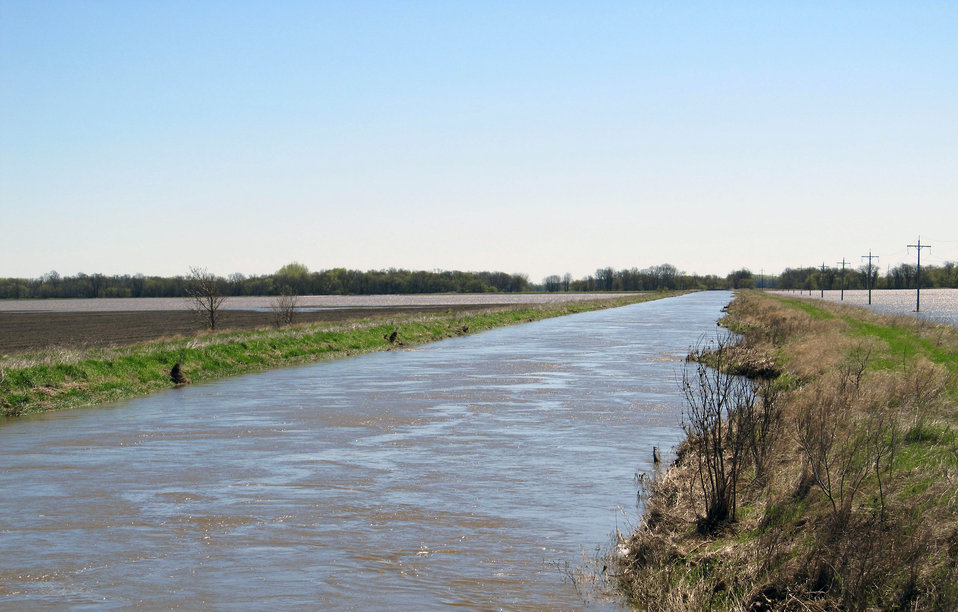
Flooding and water damage in the Park and Tongue River Watersheds located in Cavalier, Pembina and Cavalaier Counties in ND on Thursday, May 23, 2013.